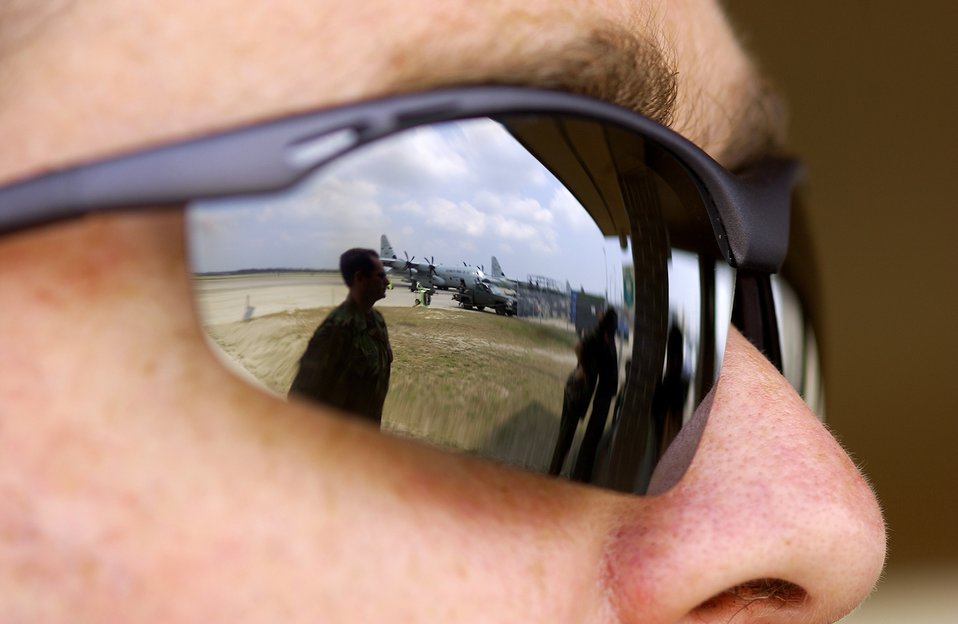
Eye on the mission

GULFPORT, Miss. -- Capt. Todd King prepares to carry patients onto a C-130J Hercules during Exercise Lifesaver here May 20. Military personnel joined local, state and federal agencies in a Homeland Security/National Disaster Medical System exercise that was conducted in eight states. Captain King is a ground support coordinator from the 183rd Aeromedical Evacuation Squadron in Jackson.